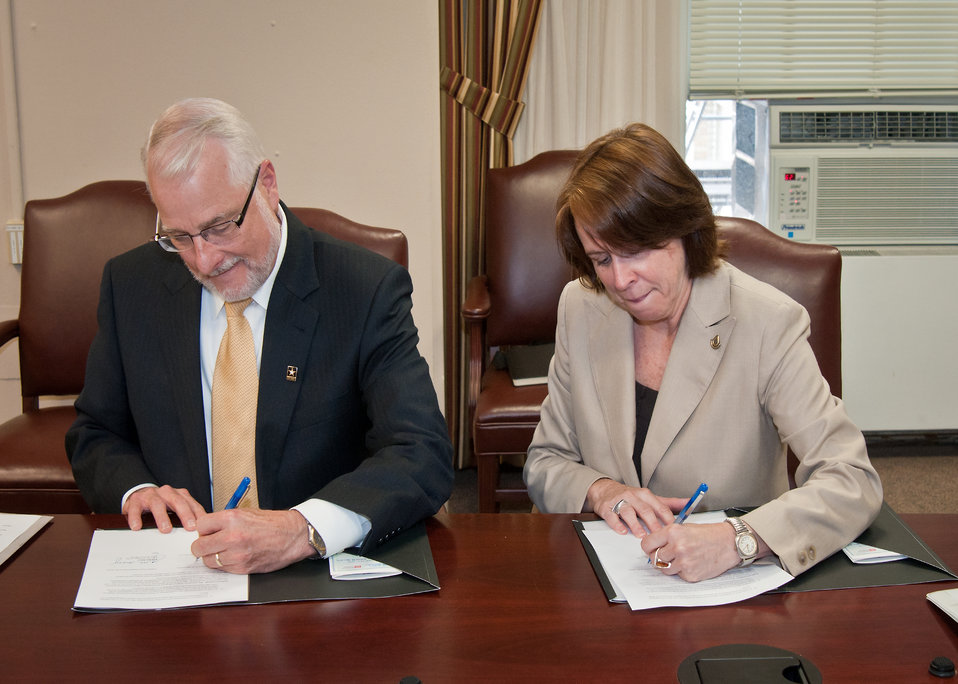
Dave White, Chief, Natural Resources Conservation Service and Jo-Ellen Darcy, Assistant Secretary Army, Civil Works signed a Memorandum of Agreement at the United States Department of Agriculture in Washington, DC, Thursday, May 26, 2011. The purpose of the MOU is to promote a long-term working relationship between the United States Department of Agriculture, Natural resources Conservation Service and the Office of the Assistant Secretary of the Army, Civil Works on collaborative efforts to improve the management of water and related natural resources under the missions and authorities of NRCS and the Department of the Army, Civil Works mission through the U.S. Army Corps of Engineers.